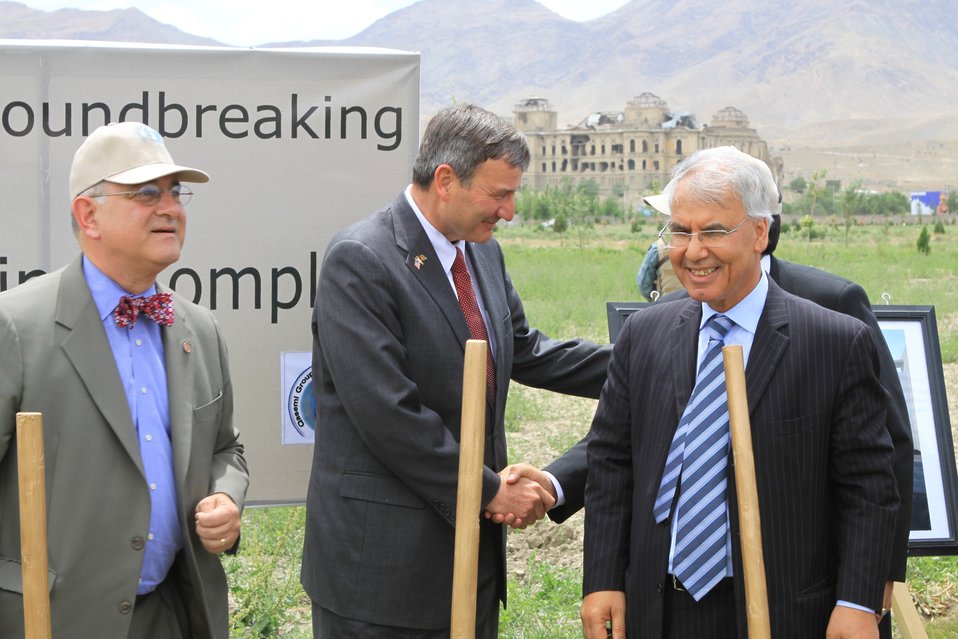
100526 AUAF Graduation 423